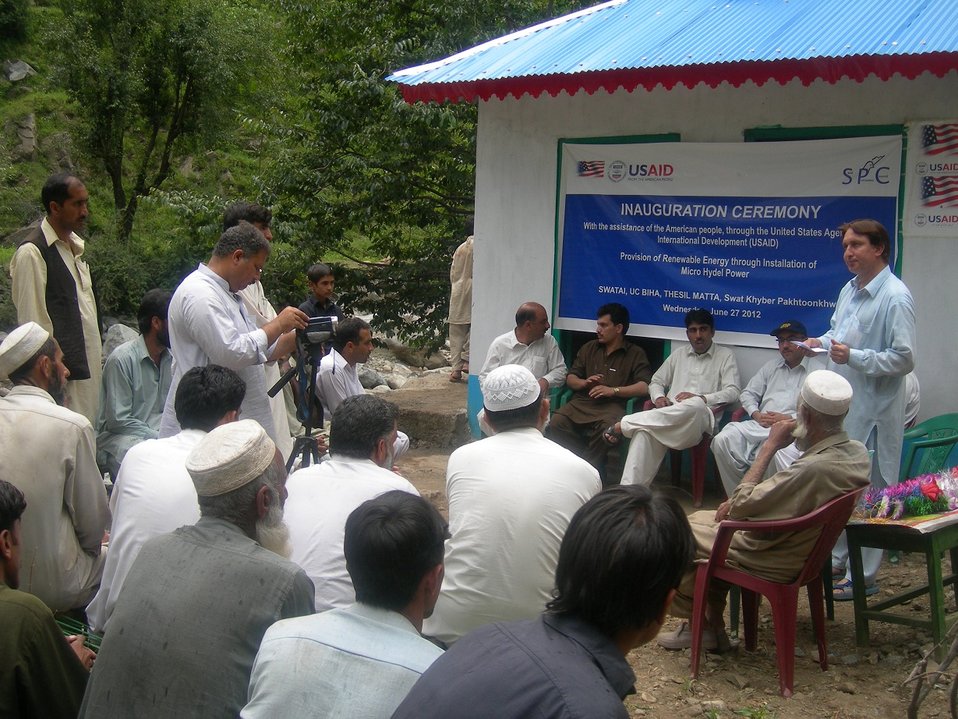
INAUGURATION CEREMONY

A new wave of energy has swept a remote village of Matta Tehsil. Children are excited, elders relieved. Electricity had lit their dark houses after over six decades of independence and connected them to the modern world.
“We can now watch cartoons on the TV just like all the other children,” said an excited child during the inauguration of a micro-hydropower station on Saturday.
The community-based power station, which will supply electricity to about 110 households in Swatai village, has been installed with the assistance of Small Grants Ambassador Fund Program of the USAID in collaboration with the Swat Participatory Council (SPC).